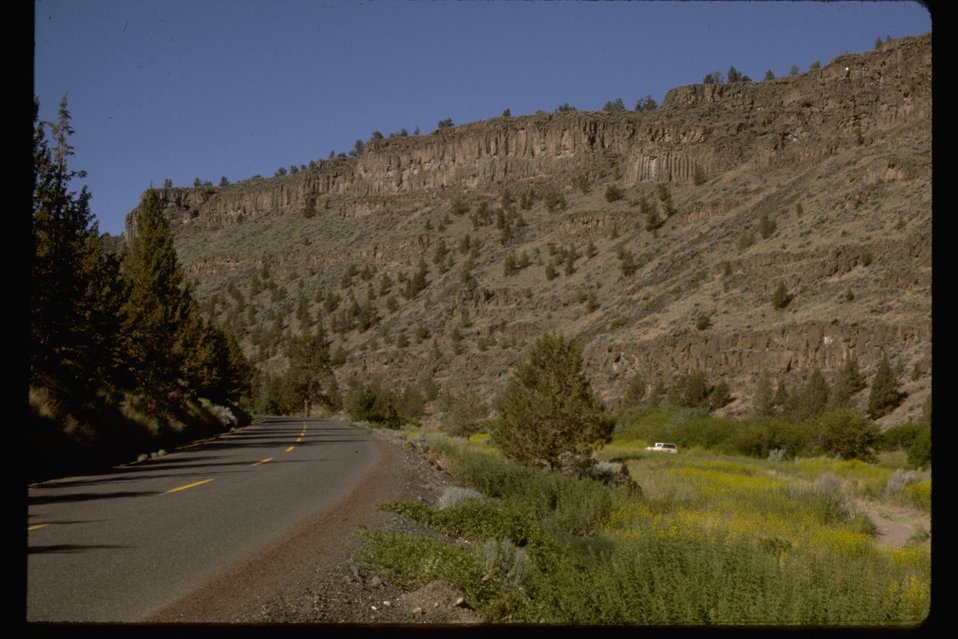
Back Country Byway along the Crooked River.